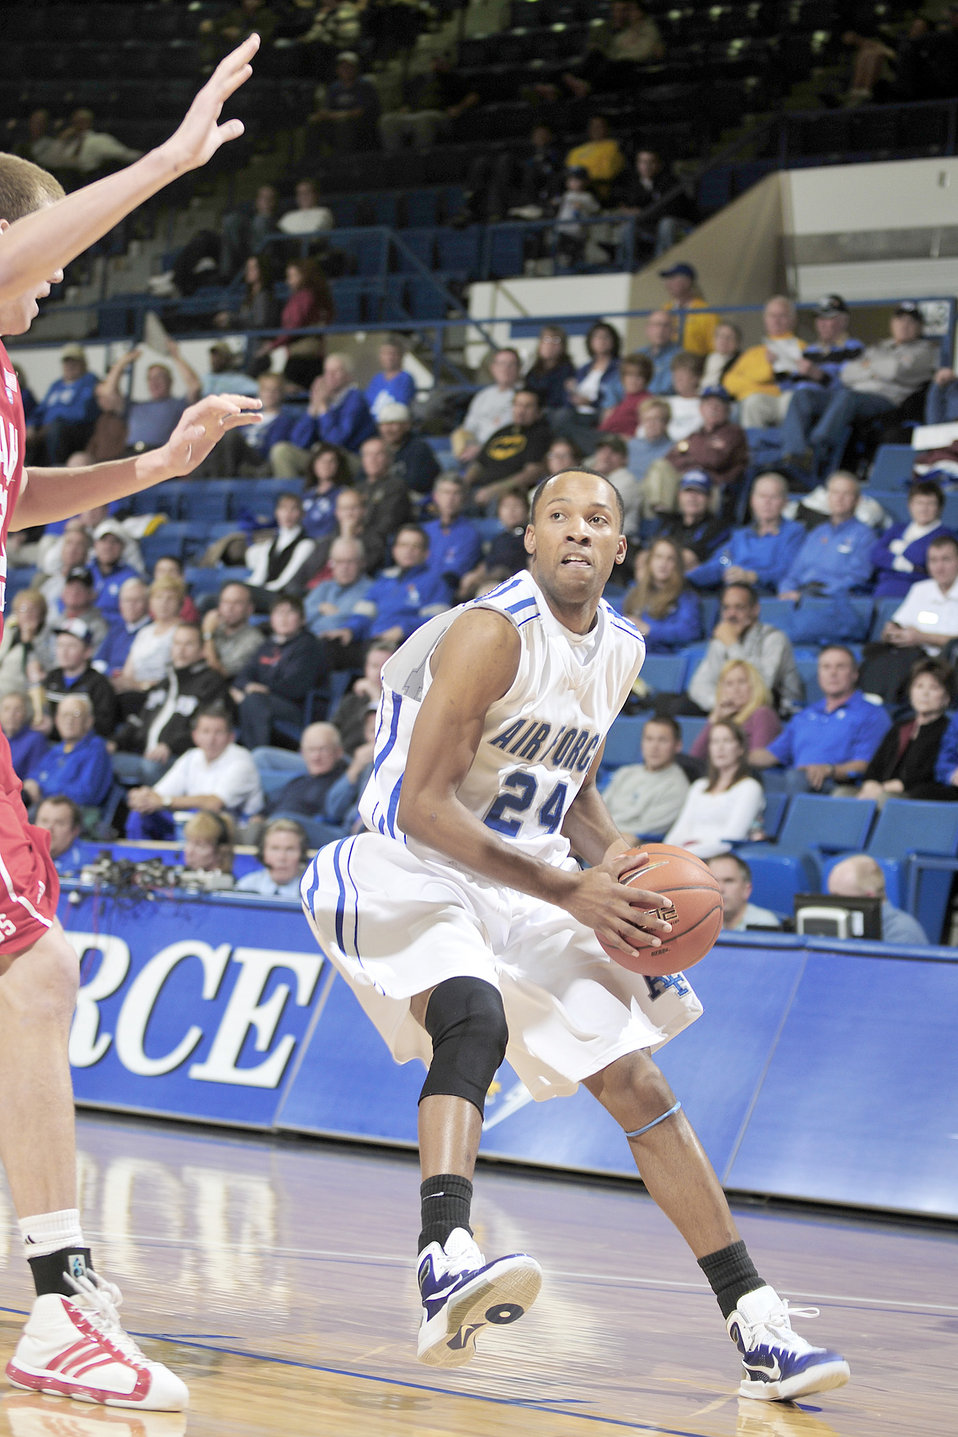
Falcons win home opener

Air Force Academy senior Derek Brooks drives towards the basket for 2 of his 10 points during the Falcons Mountain West Conference home opener Jan. 5, 2011, against Utah at the Academy's Clune Arena in Colorado Springs, Colo. The Falcons upset the Utes 77-69.